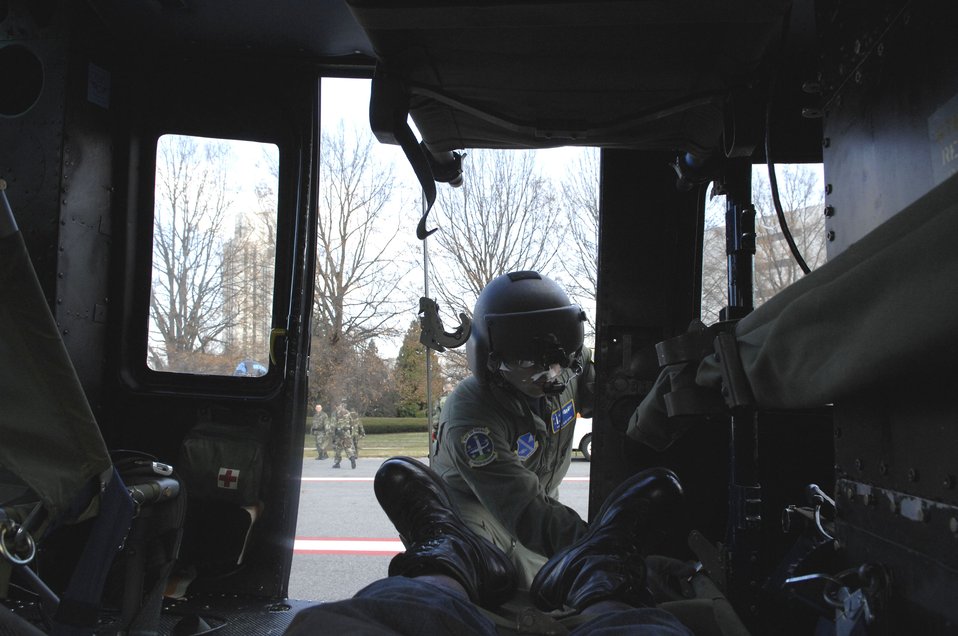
CMAX/Collaborative Multi-Agency Exercise

Staff Sgt. Ben Siems closes the door of a UN-1N Huey helicopter after Navy and Air Force medics loaded a